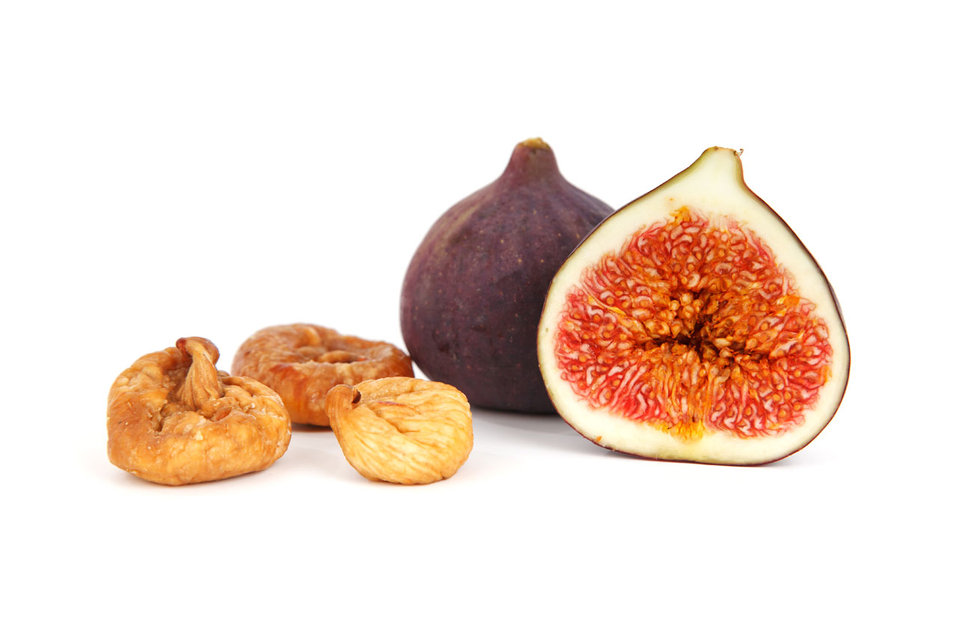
Figs

Common fig (ficus carica) fruit isolated on white background.